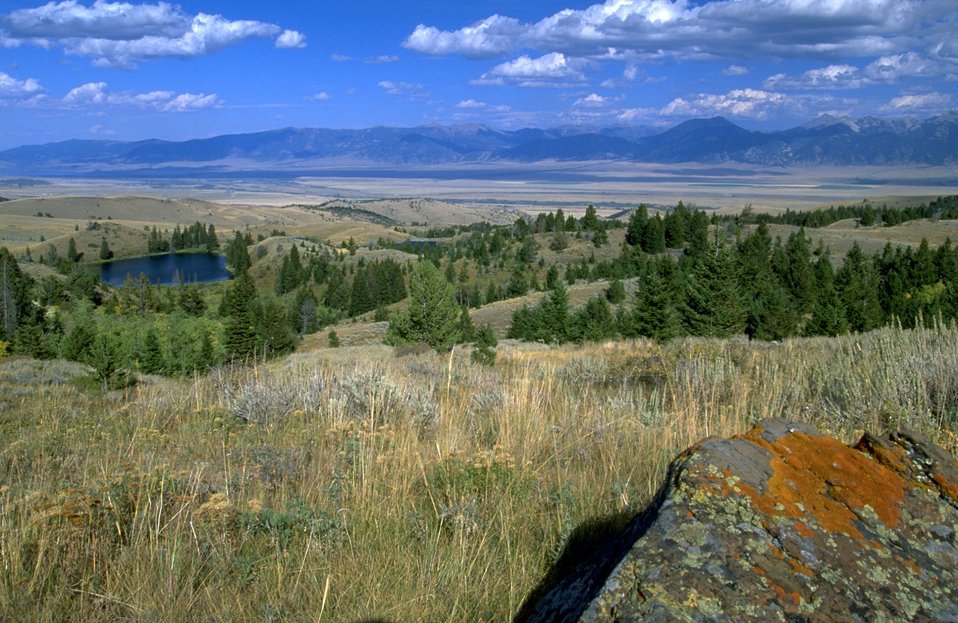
Broad view of Twin Lakes and valley